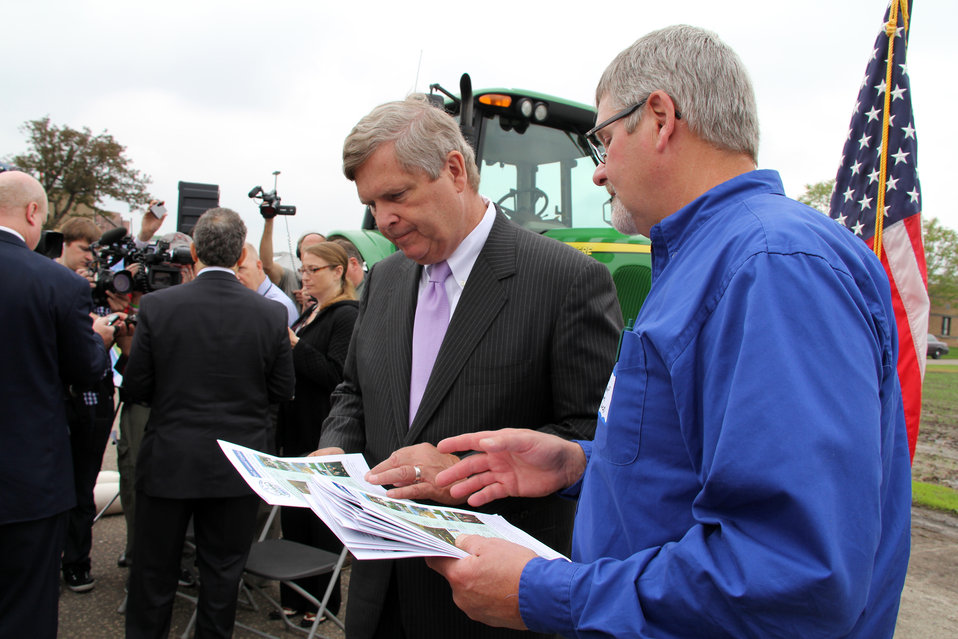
Stearns Soil and Water Conservation District (SWCD) board member Chuck Uphoff shares the 2012 Annual SWCD report with Agriculture Secretary Tom Vilsack at the Minnesota Agricultural Water Quality Certification program event held at held at St. Paul University, St. Paul, MN on Monday, Jun. 10, 2013.